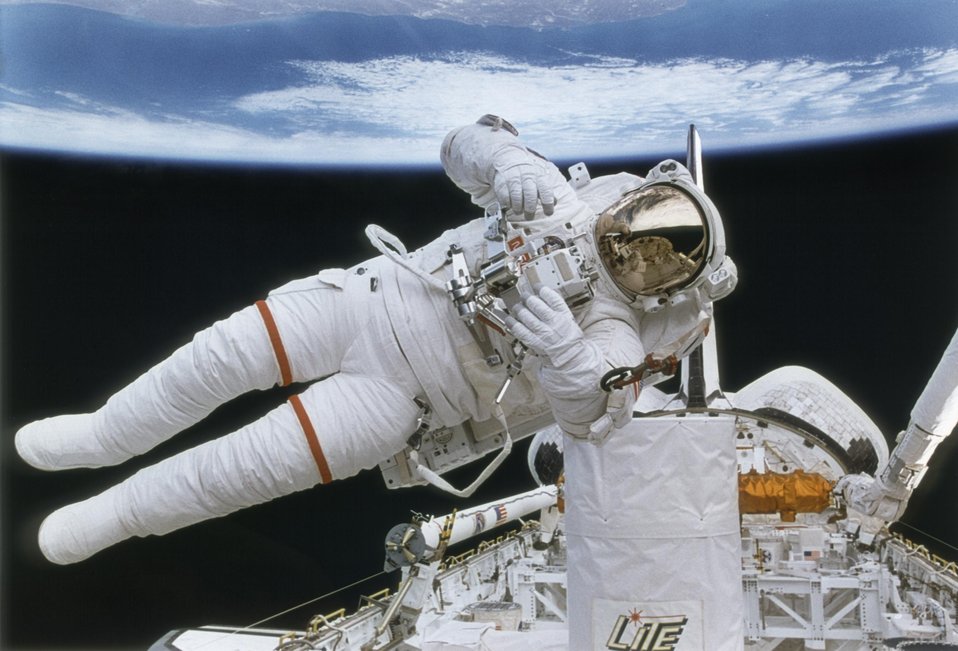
NASA accpeting applications

Astronaut Mark Lee tests the backpack called Simplified Aid for Extra-Vehicular Activity Rescue in 1994. Active duty Airmen can apply for an assignment with NASA through USAJobs' website through Jan. 12, 2012.